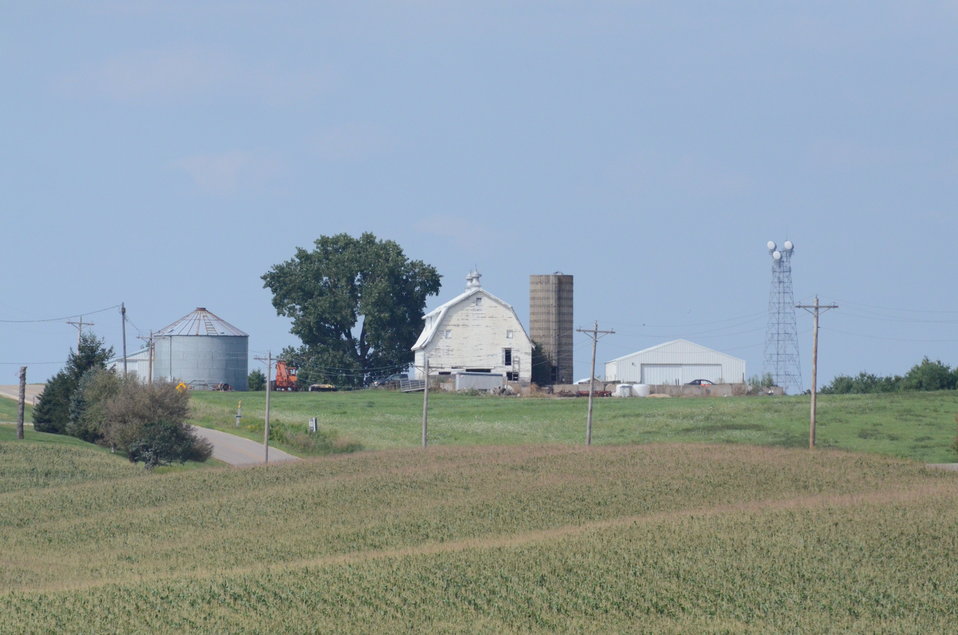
A cell tower helps provide Internet access in rural areas of Iowa, on Tuesday, Aug. 16, 2011.